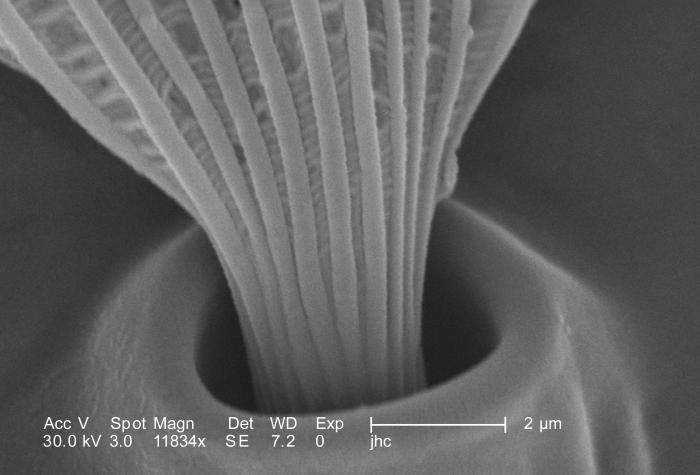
In this highly magnified scanning electron micrographic (SEM) view, some of the wondrous ultrastructural shapes found on the surface of an unidentified white moth were revealed. This moth, discovered deceased in the Decatur, Georgia suburbs, was a member of the Phylum Arthropoda, Order Lepidoptera. At this level of magnification, 11834X, the proximal strut of a single scale could be seen as it inserted into its exoskeletal pore. Imagery such as this brings to life the incredible beauty, which goes unseen, but is abundant all around us. For another view of this region, at a lower magnification, see PHIL 9842.